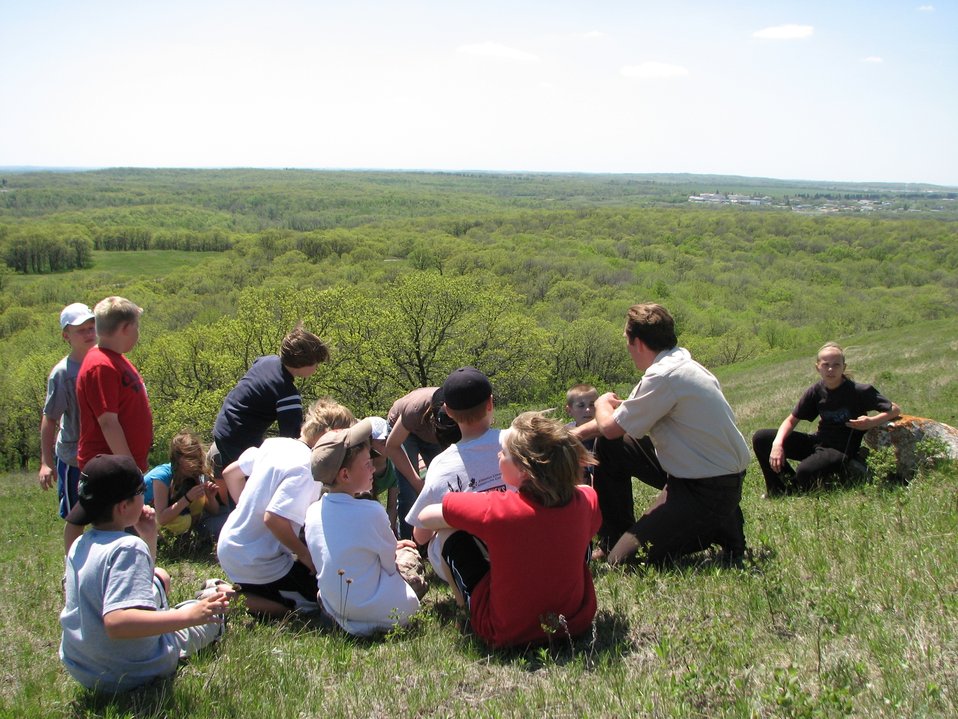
Educating School Children

Sitting high atop a hill, Refuge Manager Tom Ibsen educates school children about the diversity of prairie grasses and flowers at Sullys Hill National Game Preserve in North Dakota.